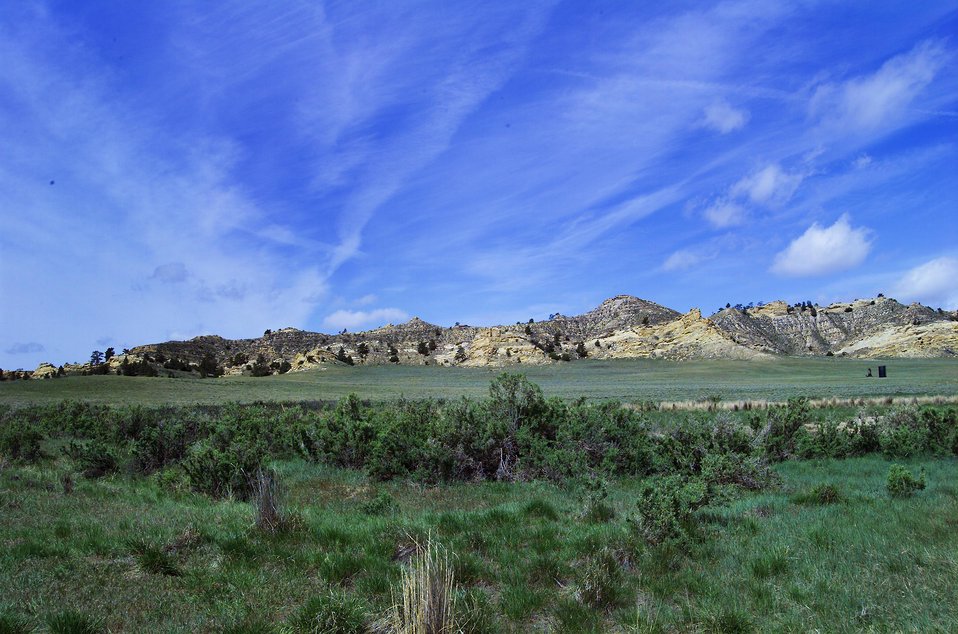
Hills surround Naval Petroleum Reserve No.3(NPR-3) near Casper, Wyoming.

The Rocky Mountain Oilfield Testing Center (RMOTC) is a Department of Energy field test site for emerging and developing technologies to address critical energy issues.The field test site, located on Naval Petroleum Reserve NO.3 (NPR-3), is a 10,000-acre site. There are approximately 700 well bores with 600 producing wells ranging in depth from 500 to 5,000 feet.